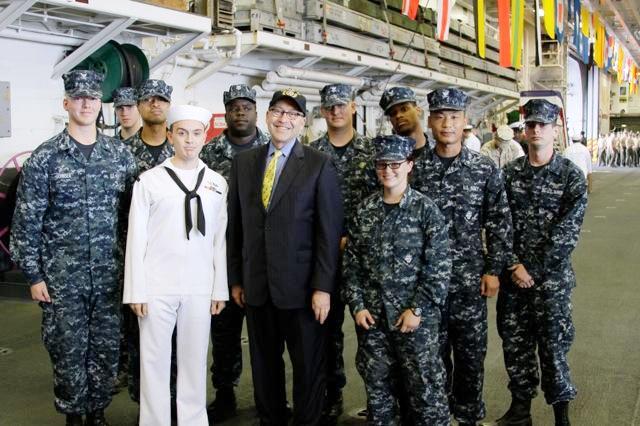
Ambassador Jacobson With U.S. Wasp Marine and Navy Crew Aboard the USS Wasp

U.S. Ambassador to Canada David Jacobson poses for a photo with U.S. Wasp Marine and Navy crew aboard the USS Wasp in Halifax, Nova Scotia, Canada, on June 30, 2010.